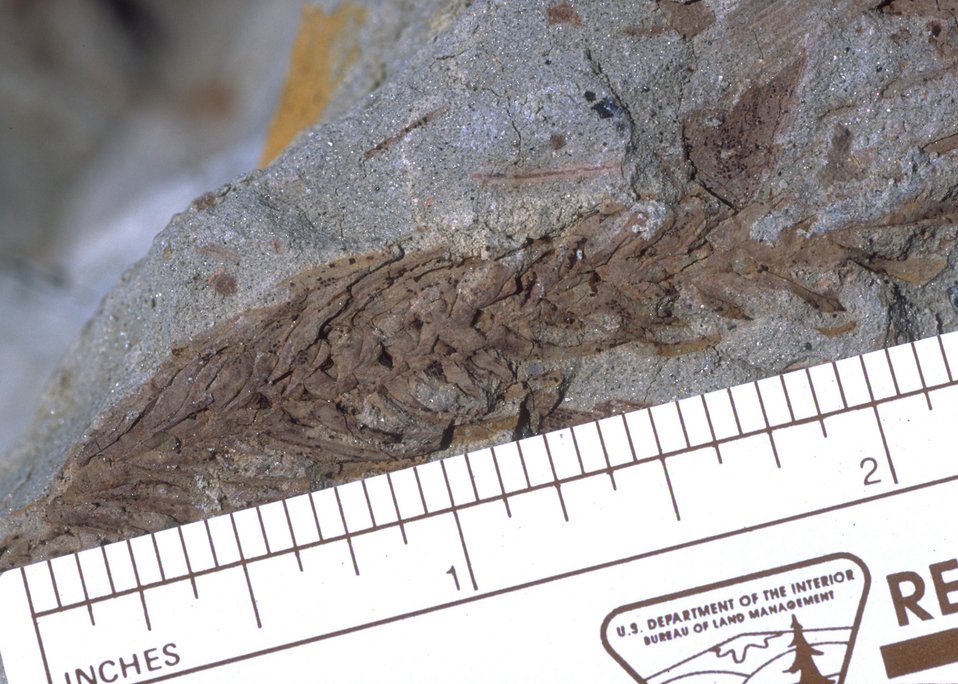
Close up of fossil vegetation, Cedar Ridge Paleo area, Worland Field Office.